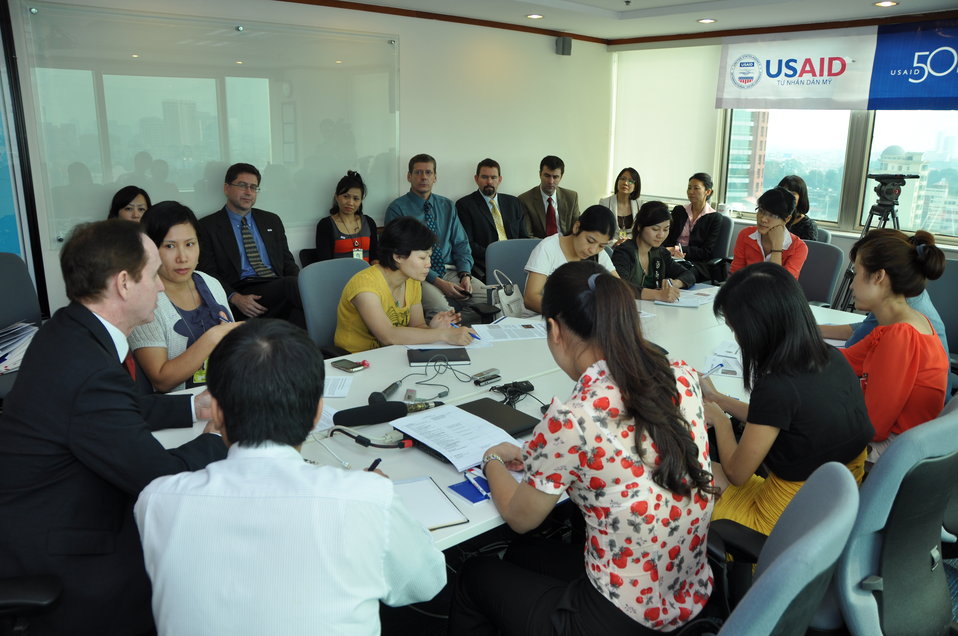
USAID Vietnam Open House, November 3, 2011